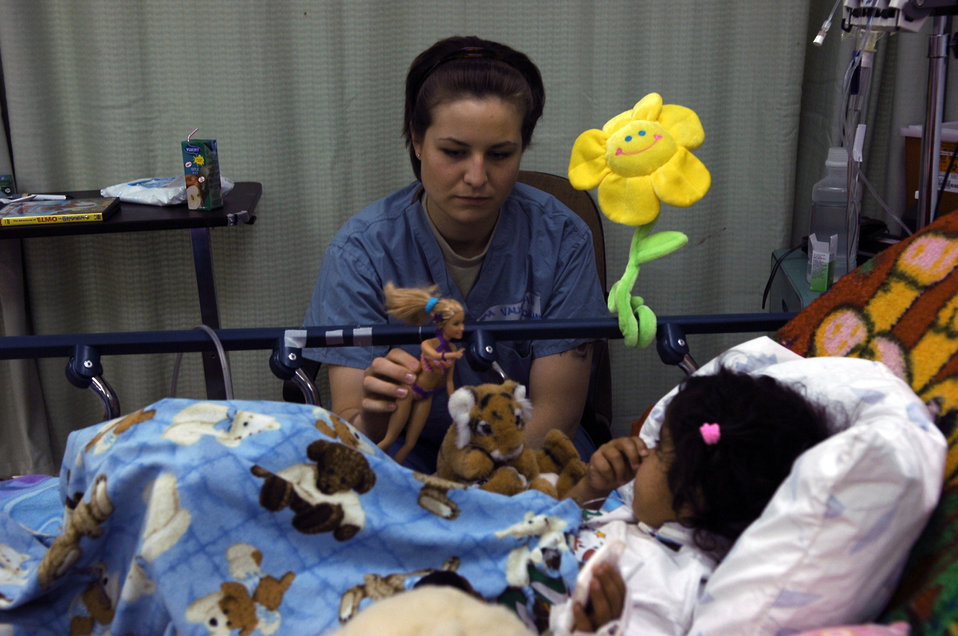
Airmen go from flight operations to the operations table

Senior Airman Nicole Vaughn spends time with a young Iraqi girl who is a patient at the Air Force Theater Hospital May 7 at Balad Air Base, Iraq. Airman Vaughn is involved in the job-swap program, which allows Airmen outside of the medical career field to spend a day shadowing hospital personnel. Airman Vaughn is assigned to the 23rd Expeditionary Fighter Squadron and deployed from Spangdahlem AB, Germany.